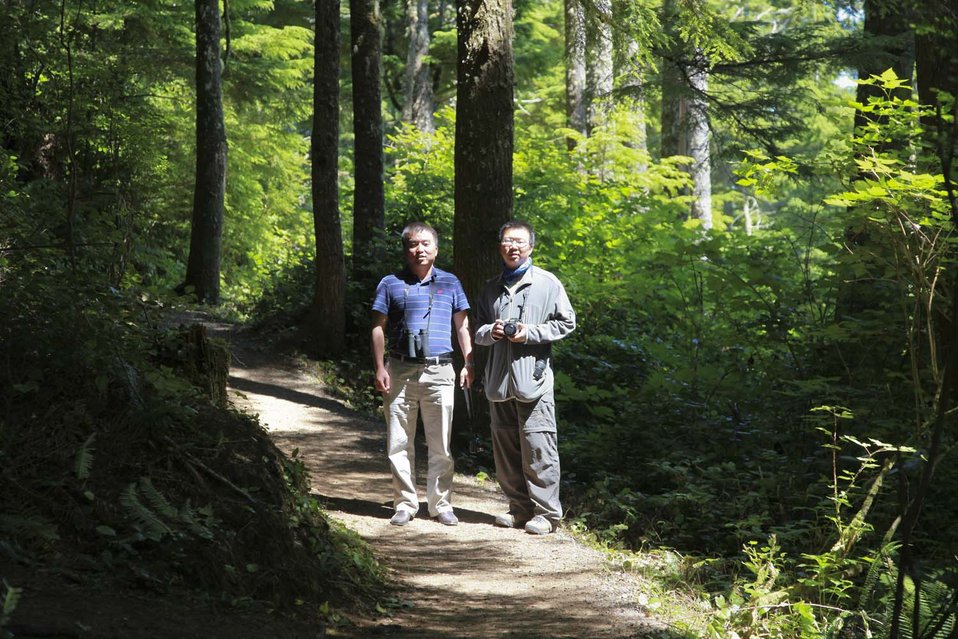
Cape Meares Trail